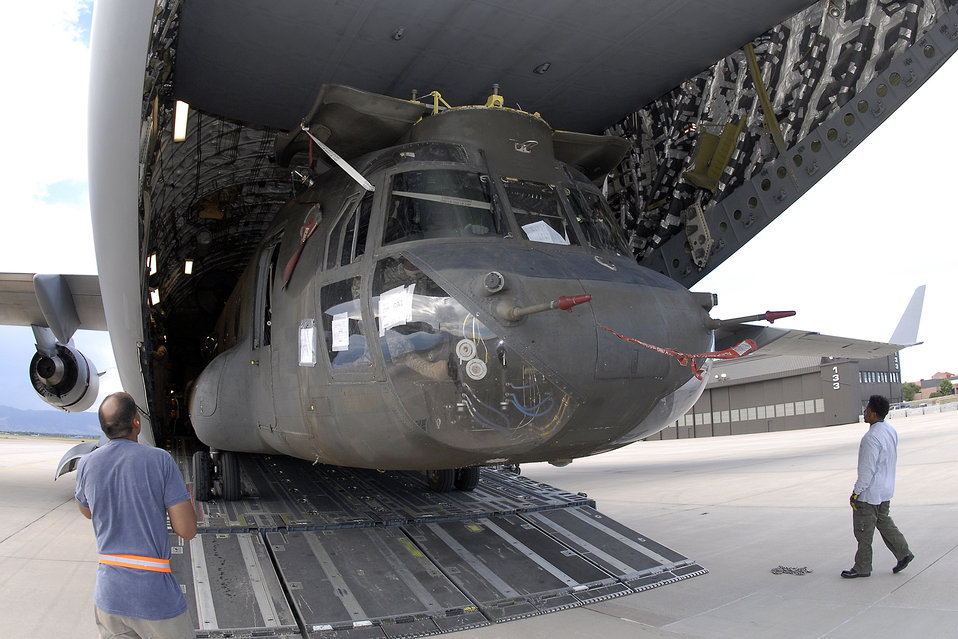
Chinook shipment a joint effort by Army, Air Force

A Chinook CH-47D juts out from a C-17 Globemaster III's cavernous cargo bay Aug. 30 at Peterson Air Force Base, Colo. Employees from Sikorsky Support Services Inc., the 3rd Battalion of the 126th General Support Aviation Battalion, and National Guard units from New York and Maryland loaded the aircraft for overseas deployment.